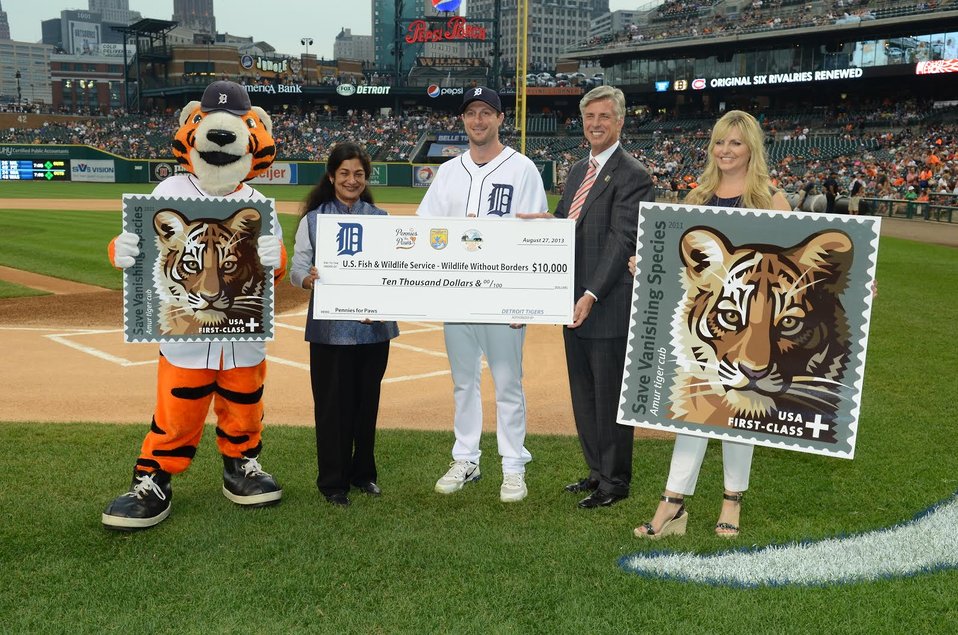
tigers-check-presentation

Detroit Tigers vs Oakland Athletics 8-27-2013.